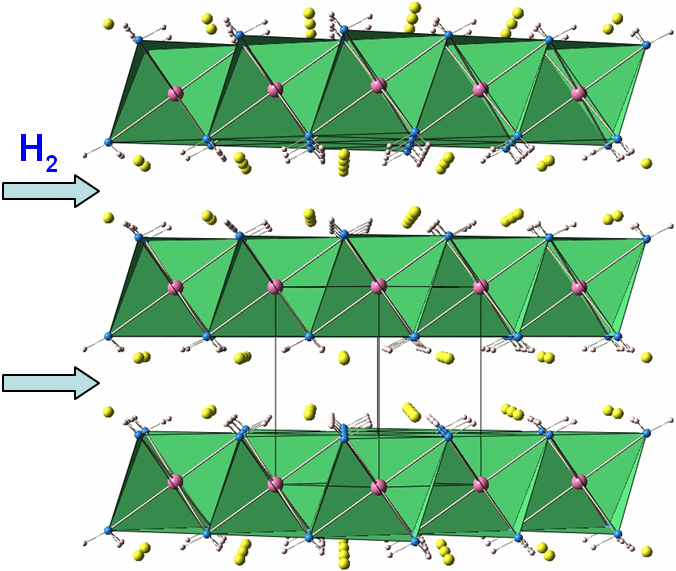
Improved Ion Mobility is Key to New Hydrogen Storage Compound

The atomic structure of the mix of lithium amide with lightweight metal hydrides shows layers of calcium that the lithium ions can sprint through. This facilitates hydrogen storage and release.